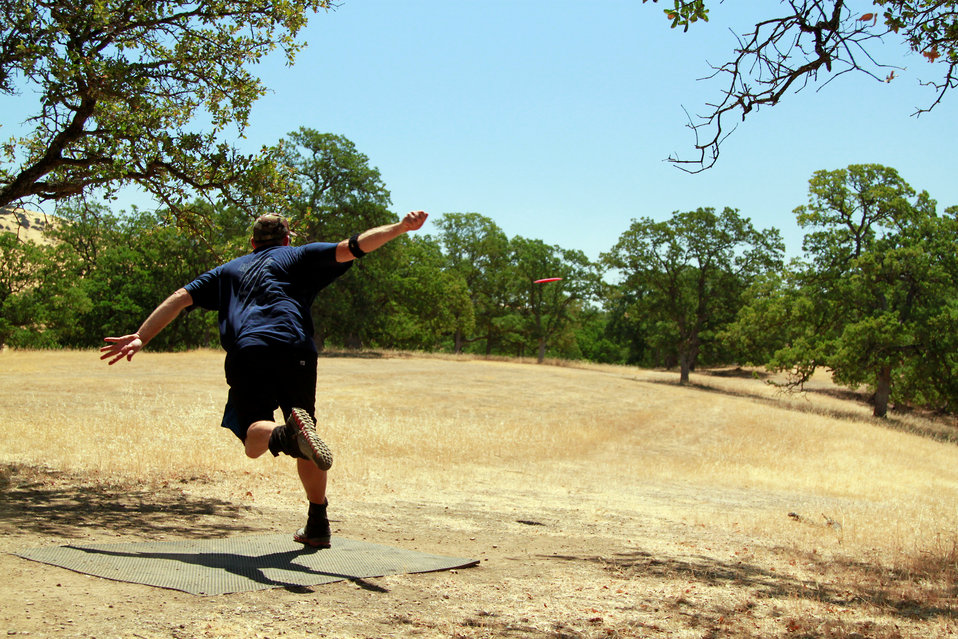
Corps' Black Butte Lake hosts disc-golf charity event

A participant tees off during this year's charity disc golf tournament at the Corps' Black Butte Lake July 1, 2012. More than $4,000 dollars was raised for the Glenn Medical Foundation this past weekend as 77 disc golfers from throughout California traveled to Black Butte Lake for the third annual Banging Chains for Charity disc golf tournament. (U.S. Army photo Seth Jantzen/Released)